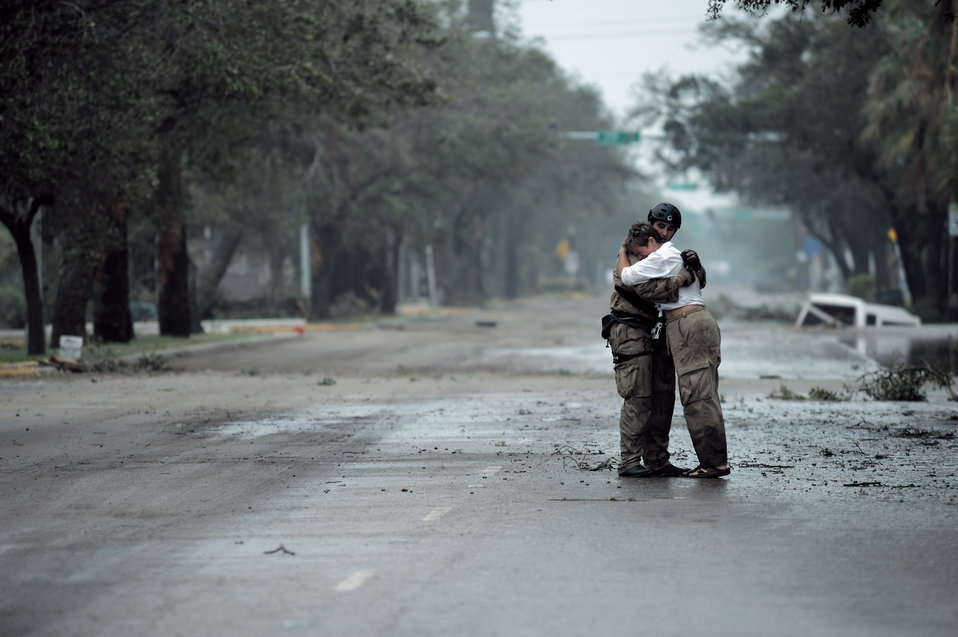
You're here!

Pararescueman Staff Sgt. Lopaka Mounts receives a hug from a Texas resident Sept. 13 during search and rescue operations after Hurricane Ike. Sergeant Mounts is assigned to the 331st Air Expeditionary Group at Randolph Air Force Base, Texas.